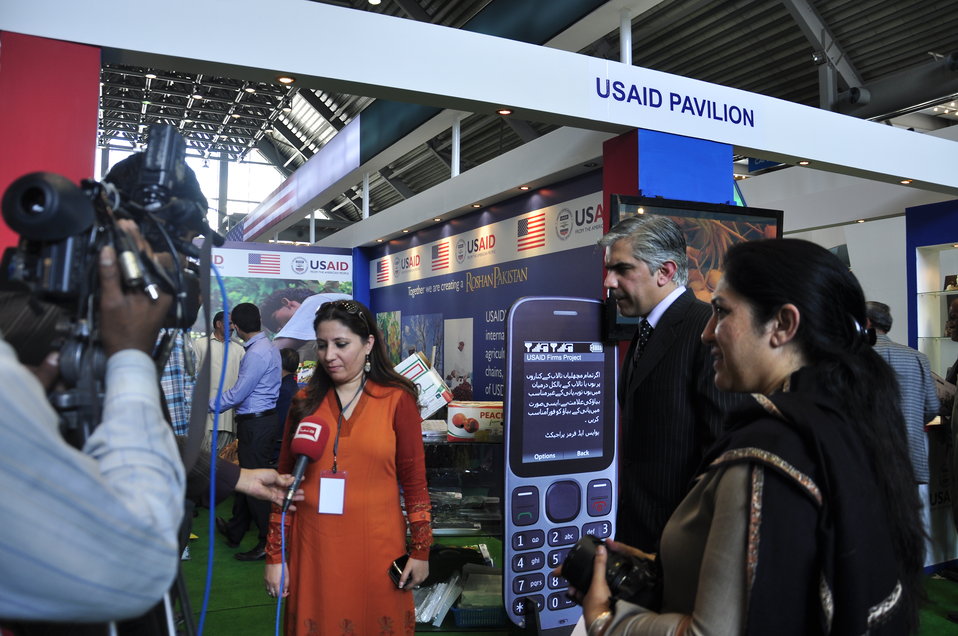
USAID's representative, Ms. Kanwal talking to Media at Dawn Sarsabz Pakistan Agri Expo.